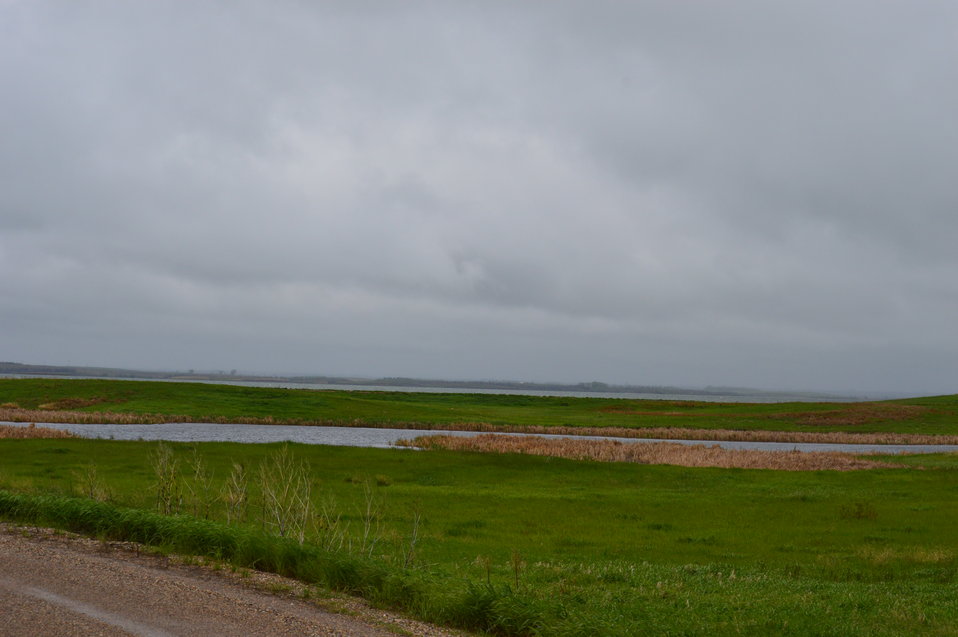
Views along the auto tour route

The 8 mile route begins near the visitor center and winds along the scenic south shoreline of Lake Audubon. Highlights include views of the lake, prairie wetlands, grasslands, and a chance to observe many species of animals and plants.